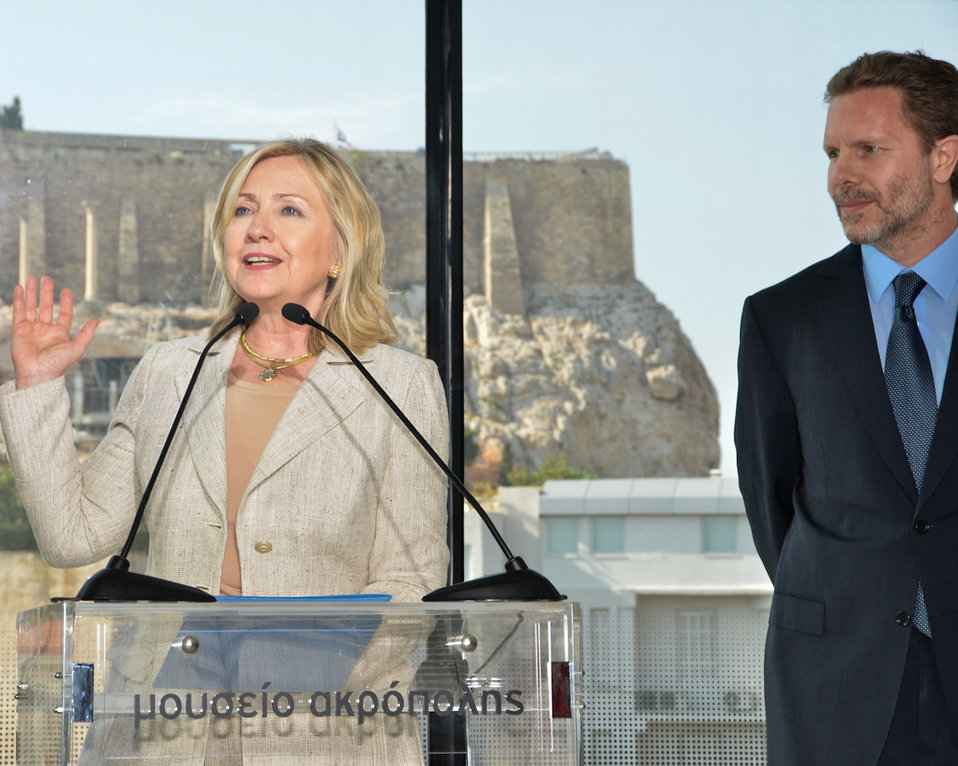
Secretary Clinton Delivers Remarks After Signing Agreement

U.S. Secretary of State Hillary Rodham Clinton delivers remarks after signing an agreement with Greek Foreign Minister Stavros Lambrinidis to reduce the incentive for further pillage of Greece's cultural heritage at the Acropolis Museum in Athens, Greece, on July 17, 2011.